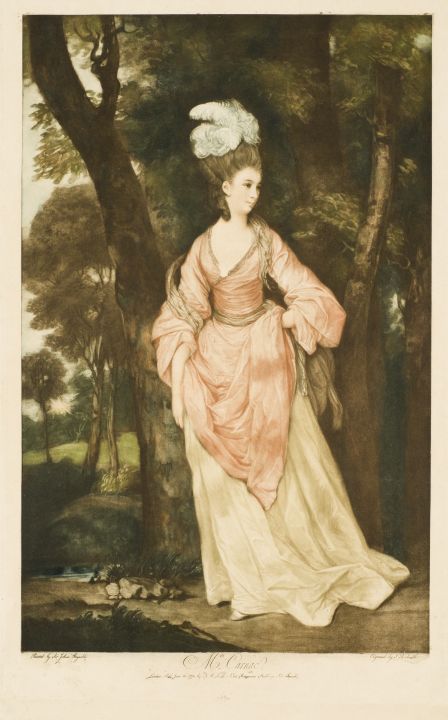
Smith mrs carnac